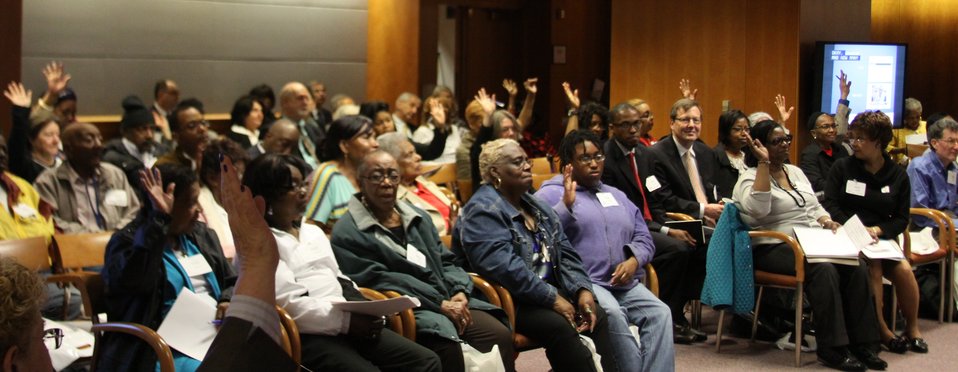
Digital Literacy for Seniors: How the Internet Can Benefit Older Americans, April 24, 2013